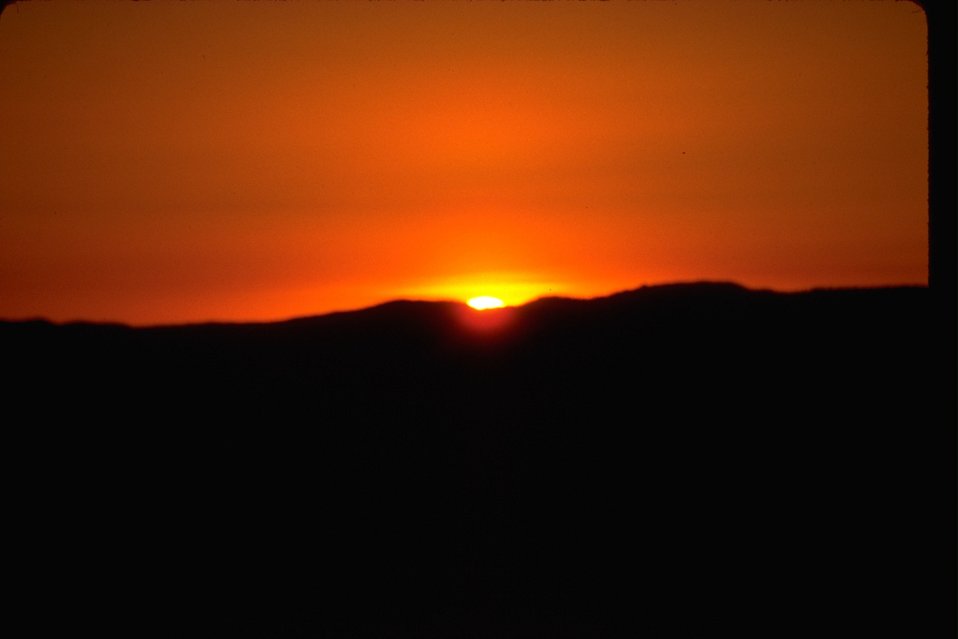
Beautiful sunset.